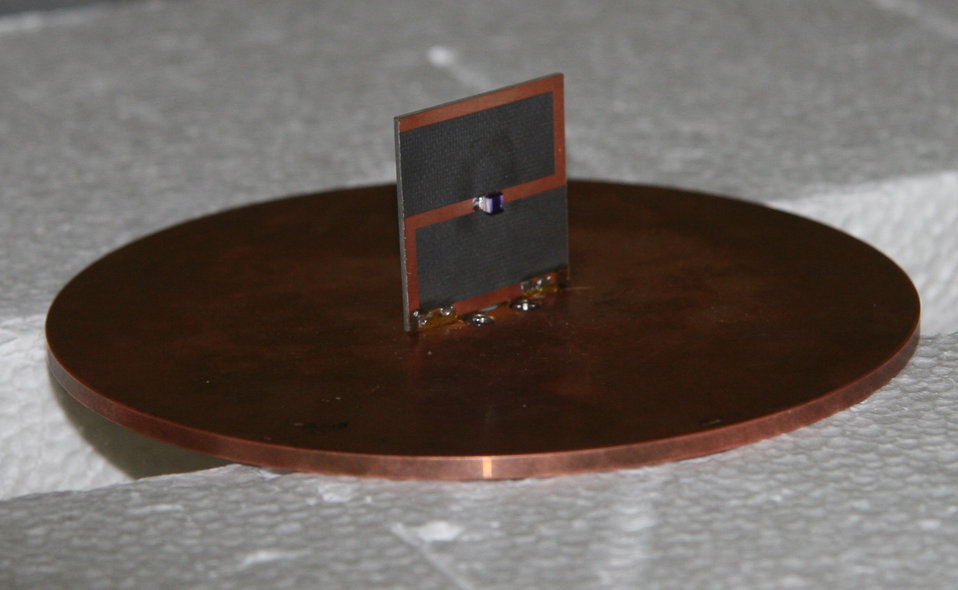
Metamaterials; Antennas

This Z antenna tested at the National Institute of Standards and Technology is smaller than a standard antenna with comparable properties. Its high efficiency is derived from the 'Z element' inside the square that acts as a metamaterial, greatly boosting the signal sent over the air. The square is 30 millimeters on a side.